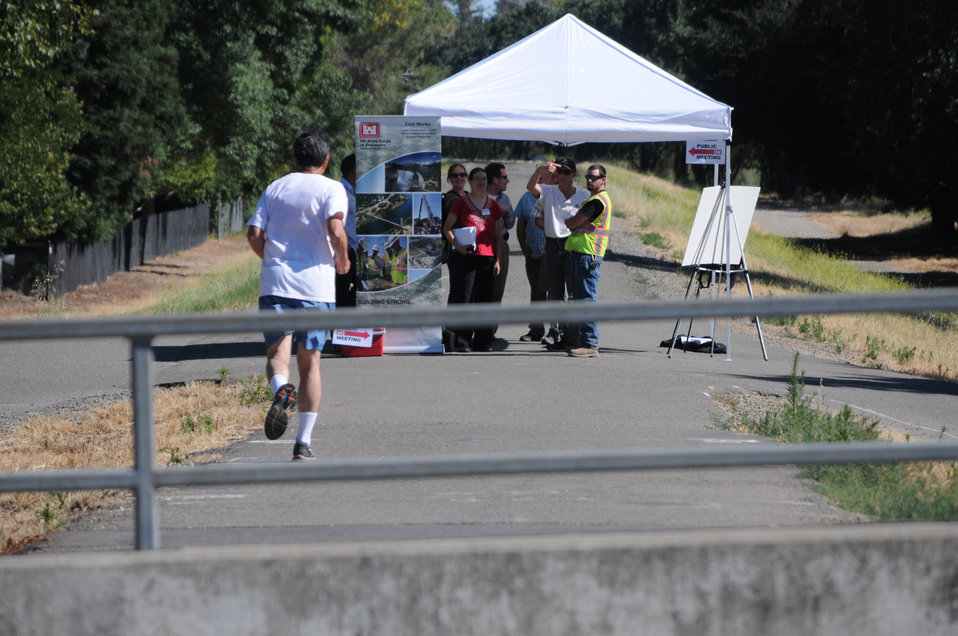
H Street Bridge pedestrian approaches public outreach

An H Street Bridge pedestrian heads toward a public workshop on an American River levee June 19, 2014, in Sacramento, Calif. Representatives with the U.S. Army Corps of Engineers Sacramento District, California Department of Water Resources and the Sacramento Area Flood Control Agency were on hand to discuss potential impacts from levee work scheduled to begin there in July.